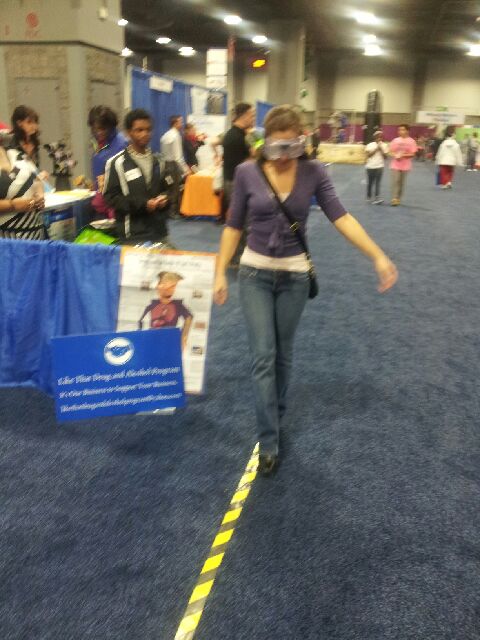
NBC4 Health and Wellness Expo January 11-12, 2014